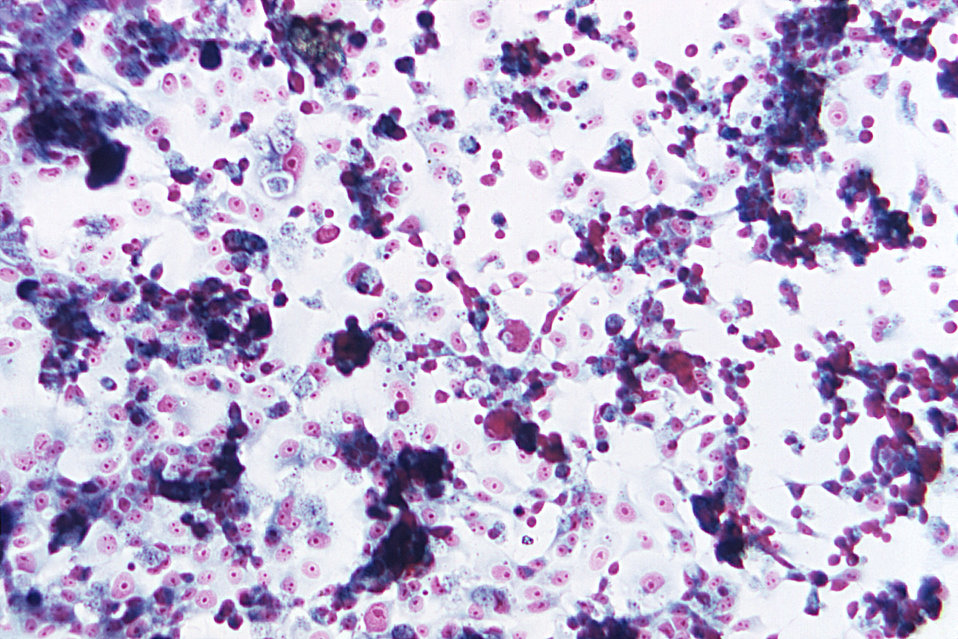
Magnified 125X, this 1973 Trichrome-stained photomicrograph revealed the presence of Naegleria gruberi, free-living amoebae in a human brain tissue specimen, in a case of primary amoebic meningoencephalitis (PAM). Free-living amoebae belonging to the genera Acanthamoeba, Balamuthia, and Naegleria, are important causes of disease in humans and animals.What is Naegleria?